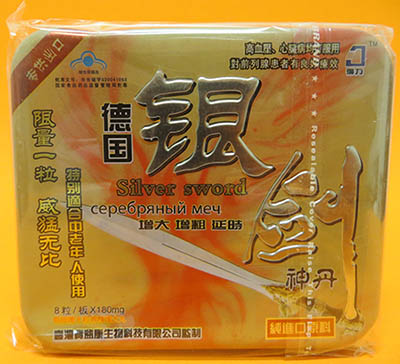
RECALLED – Dietary Supplement

July 5, 2013 – Product Recall – Hardmenstore.com Issues Voluntary Nationwide Recall of Silver Sword and Clalis at the Request of the FDA.